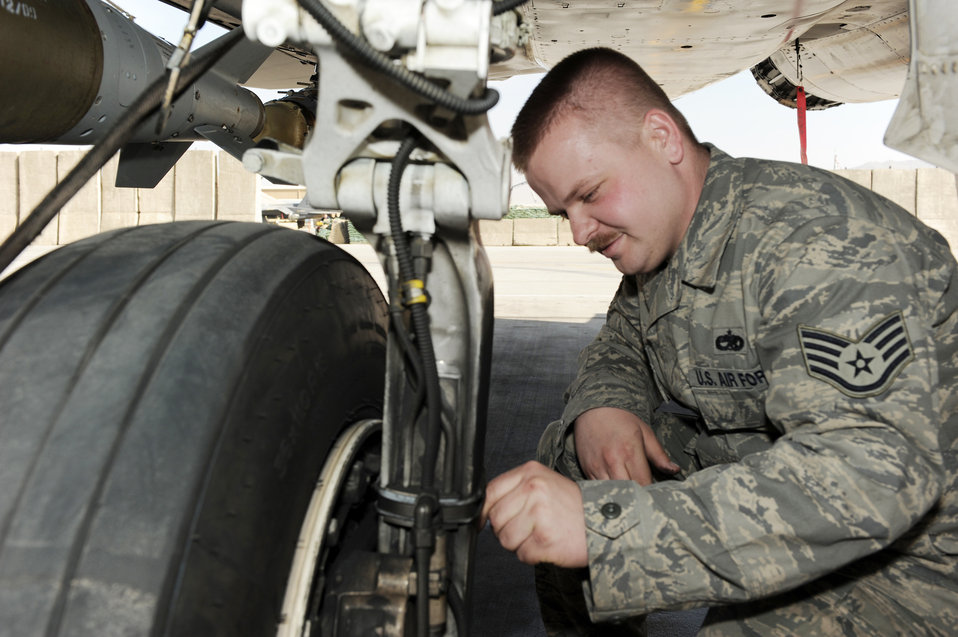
Airman's vigilance prevents aircraft mishap

Staff Sgt. Justin Wilson performs a brake inspection on an F-15E Strike Eagle during an aircraft inspection March 16, 2010, at Bagram Airfield, Afghanistan. Sergeant Wilson is a 494th Aircraft Maintenance Unit crew chief deployed from Royal Air Force Lakenheath, England, and is a native of Malone, N.Y.